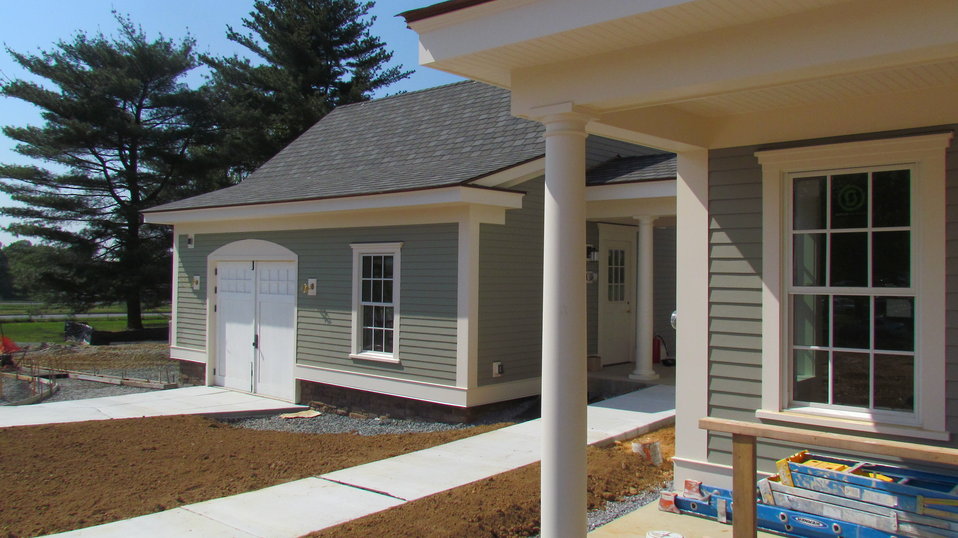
Photo showing east side and front of garage.